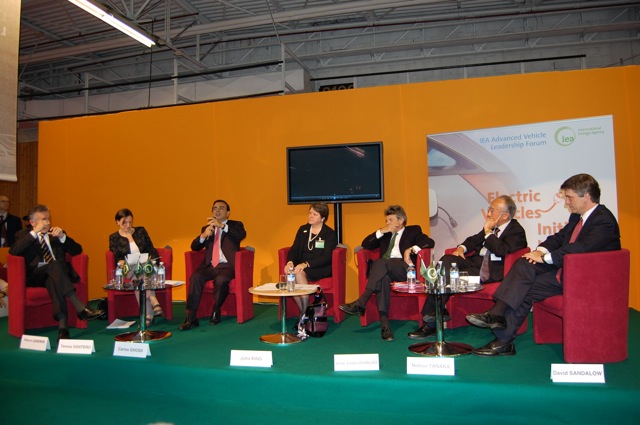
David Sandalow at the Paris Auto Show